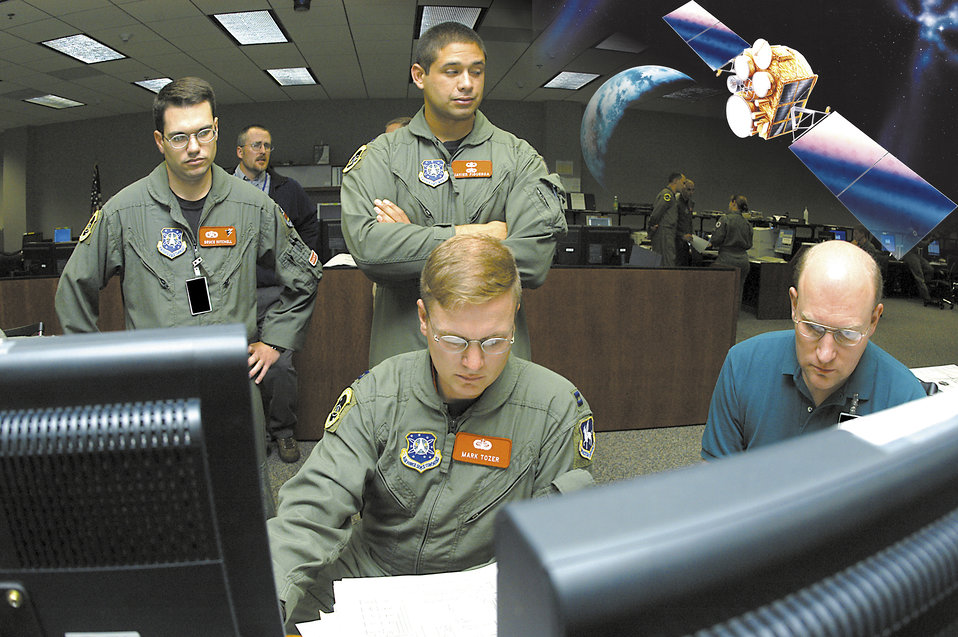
CSAF team award honors 3rd SOPS Airmen

Capts. Bruce Mitchell and Javier Figueroa, standing, help Capt. Mark Tozer and David Johnson move Defense Satellite Communications System Satellite A-2's into supersynchronous orbit June 1, 2005. Captains Mitchell and Figueroa were among 3rd Space Operations Squadron Airmen who received a Chief of Staff Team Excellence Award Oct. 4 for developing methods to preserve fuel and prolong the lifespans of DSCS satellites.